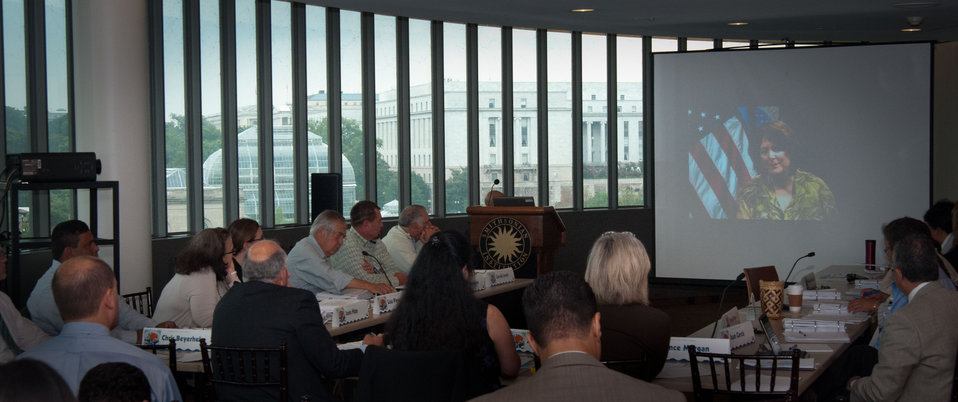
Agriculture Deputy Secretary Kathleen Merrigan's video opens the first public/business meeting of the U.S. Department of Agriculture's (USDA) Council for Native American Farming and Ranching (CNAFR), held on Tuesday, Aug. 14, 2012 at the National Museum of the American Indian, in Washington, D.C. CNAFR was created to advise the Secretary on ways to eliminate barriers to participation for Native American Farmers and Ranchers in USDA programs. The Council was established as part of the Keepseagle settlement, and is conducted under the oversight of USDA's Office of Tribal Relations, which is part of the Office of the Secretary of Agriculture. The Director of Tribal Relations Joanna Mounce Stancil serves as Designated Federal Official (DFO) for the Council.